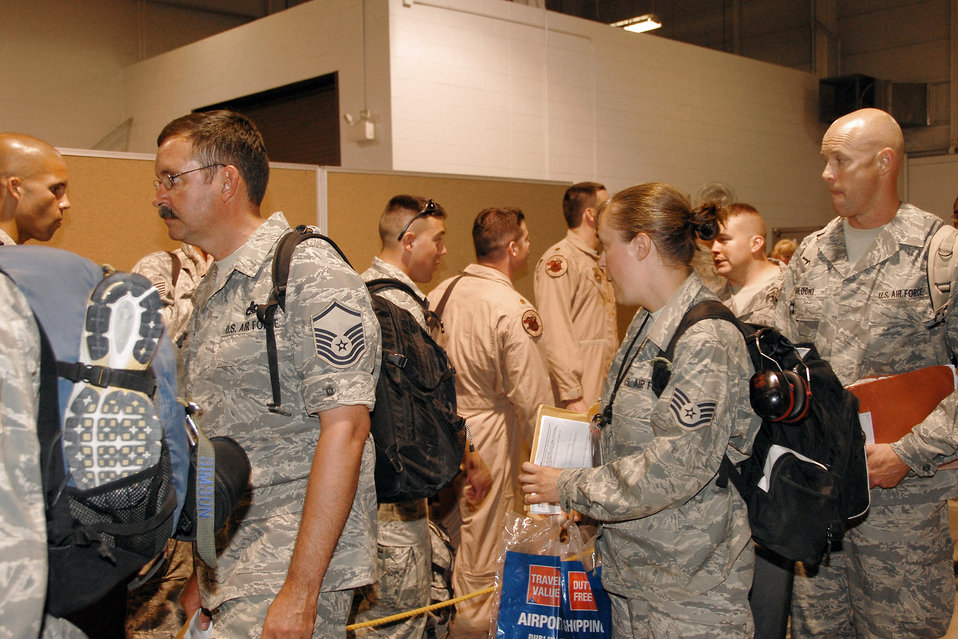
Arriving home!

Airmen from the 174th Fighter Wing at Hancock Field, N.Y., move through the processing line after returning home Aug. 5 from a deployment to Southwest Asia in support of Operation Iraqi Freedom.